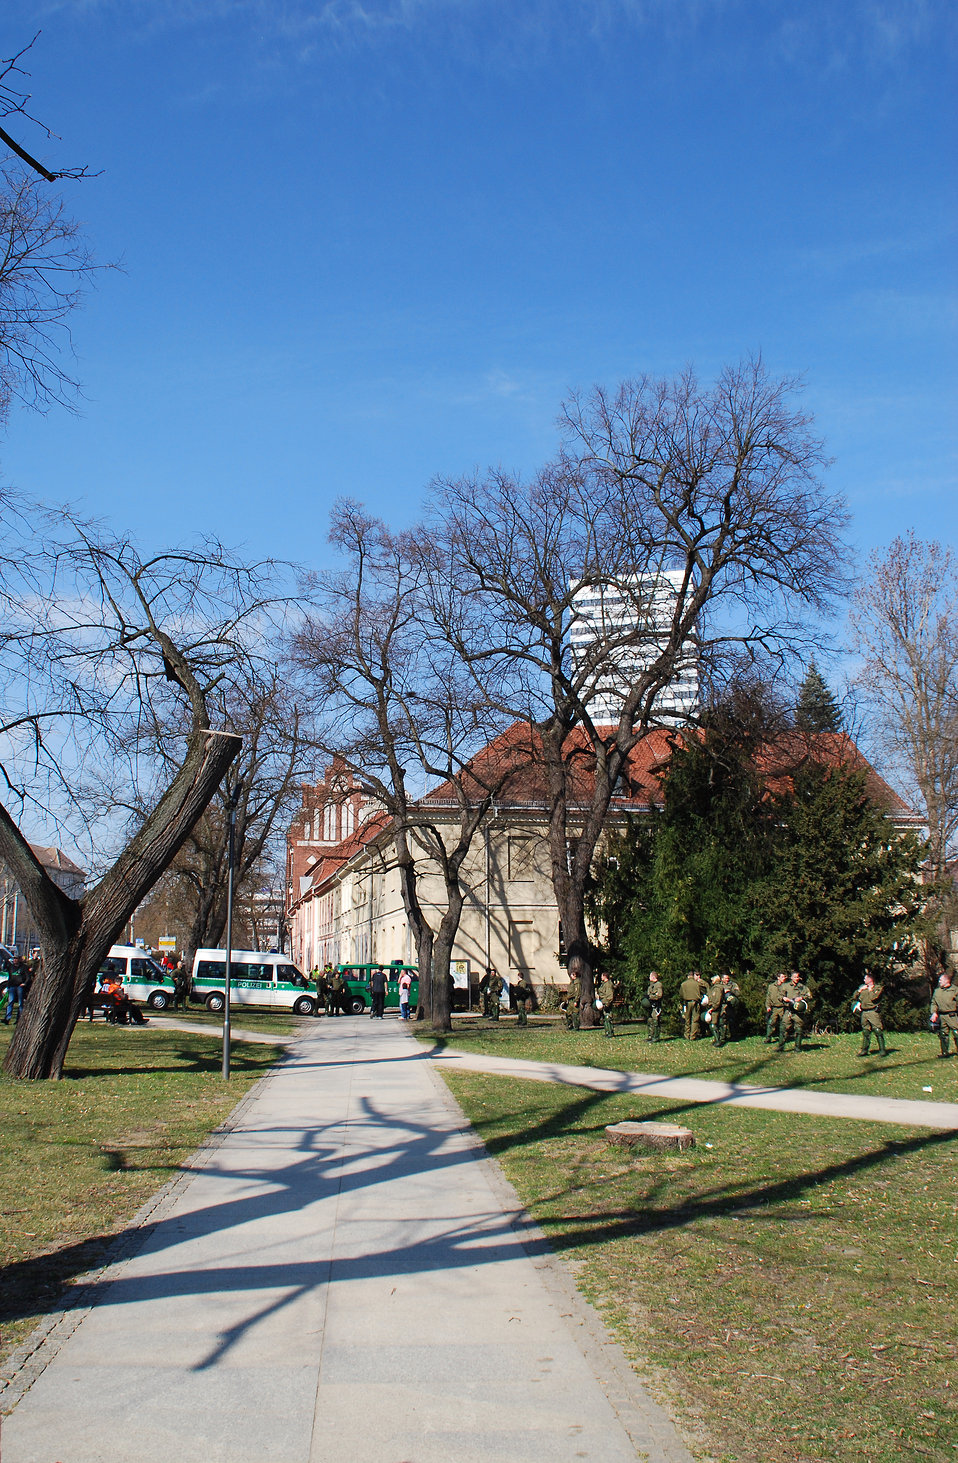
Proteste gegen den Nazi-Aufmarsch am 24.3.2012 in Frankfurt (Oder)